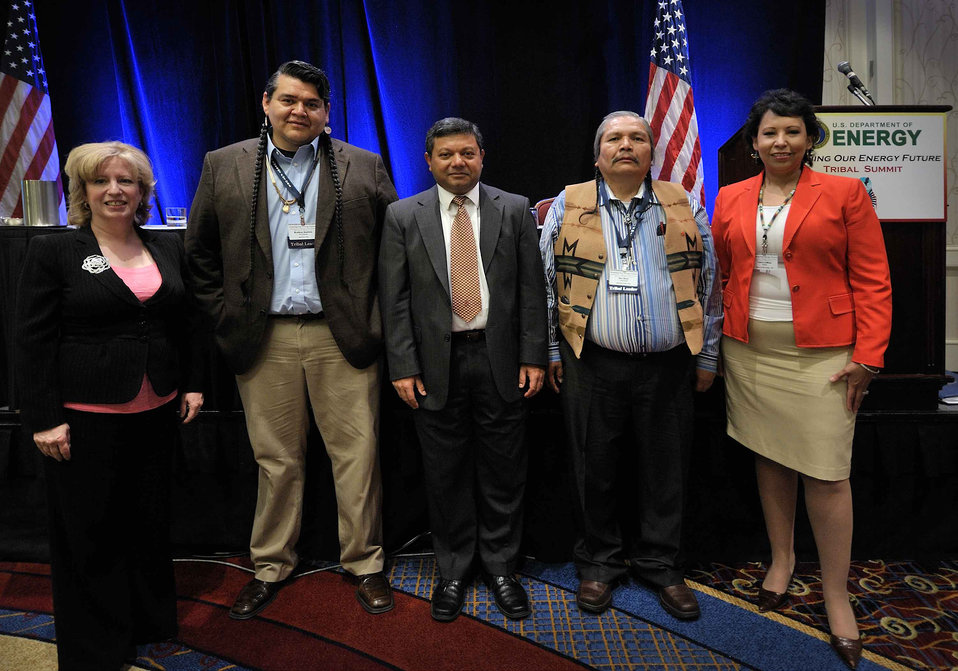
Tribal Energy Summit

From left to right Neile Miller principal assistant deputy administrator for defense programs. Brooklyn Baptiste Vice Chairman Nez Perce Tribe. Arun Majumdar. Senior Advisor to the Secretary and Director ARPA-E. Rex Buck Leader Wanapum People. Tracey LeBeau Director Officce of Indian Energy Policy and Programs.